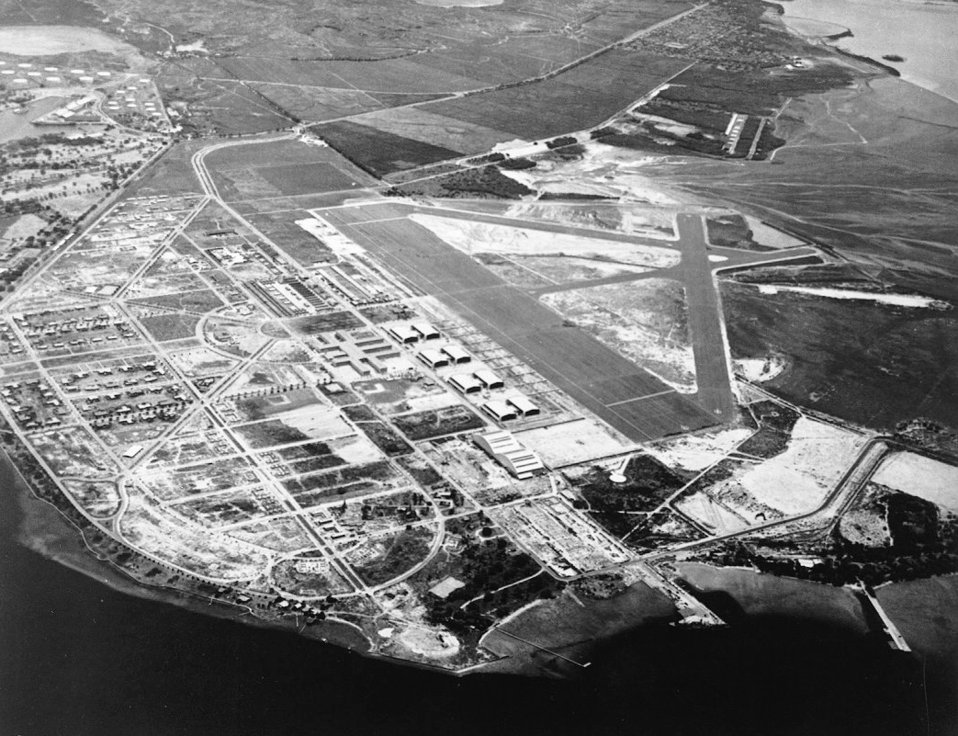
Hickam aerial view

Aerial view of Hickam Field in May 1940.